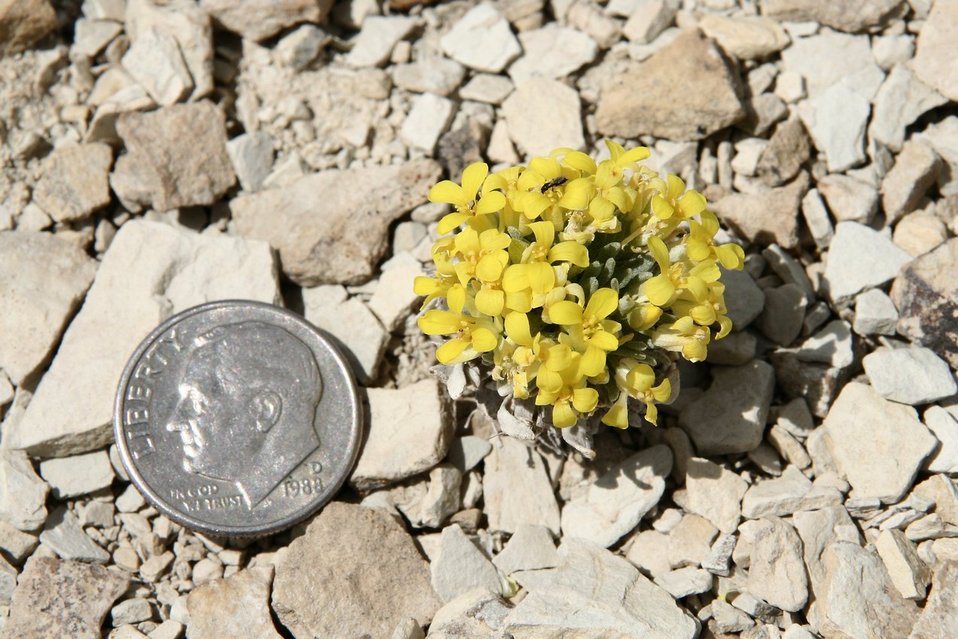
Dudley Bluffs Bladderpod

A typical Dudley Bluffs bladderpod in full bloom during early May.

Photo credit: USFWS

...........................................................................

BACKGROUND:

Dudley Bluffs bladderpod (Physaria congesta) and the Dudley Bluffs twinpod (Physaria obcordata)

The Dudley Bluffs bladderpod (bladderpod - Physaria congesta) and the Dudley Bluffs twinpod (twinpod - Physaria obcordata) are limited or endemic to barren white shale outcrops and specific soil tongues in the Piceance Basin of Rio Blanco County, Colorado. The bladderpod is known from eight populations, consisting of roughly 546,000 plants across an estimated 930 acres, while the twinpod is known from 11 populations, consisting of roughly 25,000 plants across an estimated 318 acres. Approximately 88% of the total occupied bladderpod and twinpod habitat occurs on public lands managed by the Bureau of Land Management. All known populations occur within a 20 square mile area.

When these two species were listed in 1990, natural gas drilling was not considered a threat. Previously considered inaccessible, these two species sit atop the nation’s biggest reservoir of natural gas. Fracturing technique advancements, however, have recently made these natural gas deposits accessible with 95 percent of the development near these rare plant populations. Rio Blanco County currently has over 2,600 natural gas wells, but predictions estimate there may be as many as 19,000 wells within 15 years, more than any other Colorado county. These wells and their associated infrastructure (pads, pipelines, roads, and traffic) are impacting populations and habitat of both the bladderpod and the twinpod. The Bureau of Land Management, the Colorado Natural Areas Program, the U.S. Fish and Wildlife Service (Service), and other partners have been working together to better document and study these impacts to the bladderpod and the twinpod.

Oftentimes management for rare plant species does not adequately consider impacts outside of the immediate area where a plant is found. For example, ecological effects from dust generated by heavy traffic on dirt or gravel roads can extend more than 300 feet from the road. Or, for every vehicle traveling one mile of unpaved roadway once a day, every day for a year, 2.5 tons of dust can be deposited. Effects to plants from dust can be numerous, including changes to a plant’s photosynthesis, respiration, transpiration, water use efficiency, leaf conductance, growth rate, plant vigor, and gas exchange rates. Changes to plant communities and species’ abundances within these communities have also been linked to dust deposition. Aside from dust, roads themselves alter ecosystems by importing invasive nonnative species, altering hydrology, and changing sedimentation patterns. In addition, both the twinpod and the bladderpod require pollinators for reproduction. Impacts to these solitary ground or twig nesting bees (especially their nesting habitats) may impact these species’ reproduction. We consider all of these effects to be part of “dispersed development” impacts. Our research hopes to address impacts to these two species, their associated plant communities and their pollinators. We are hopeful this research will allow land managers to better evaluate and address threats from this dispersed development.